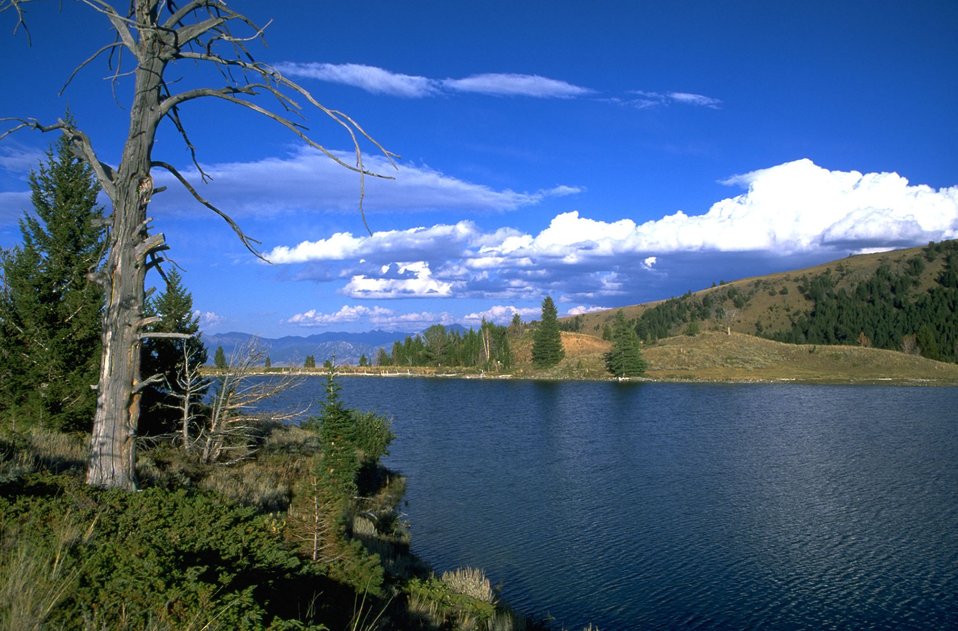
Axolotl Lakes with dead tree in foreground